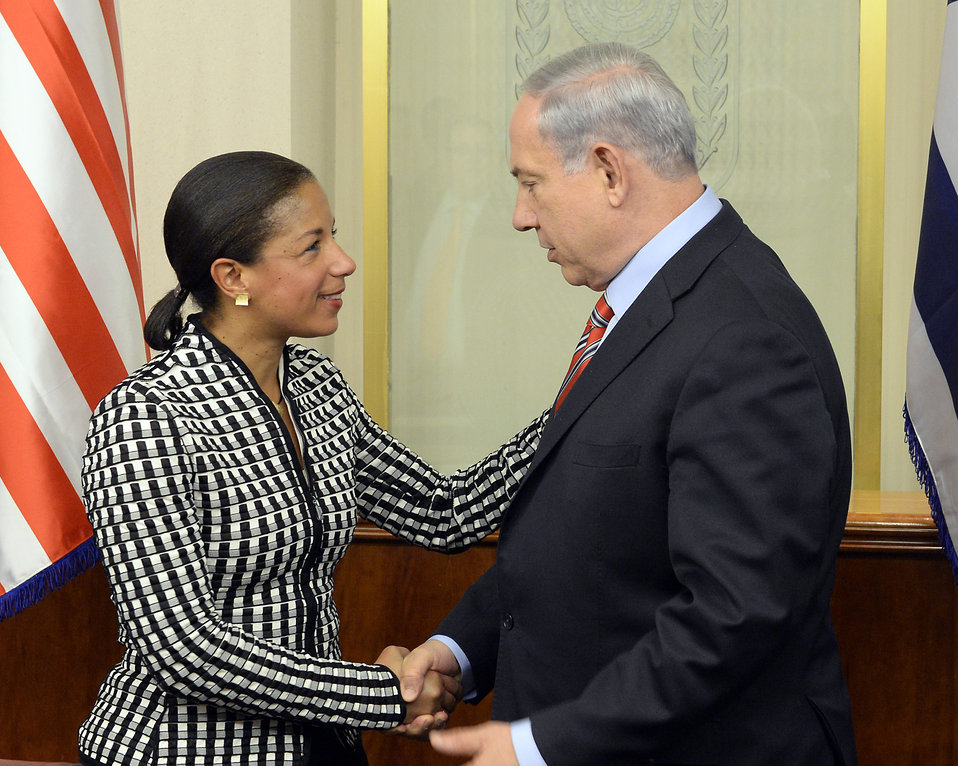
Ambassador Rice Meets With Israeli Prime Minister Netanyahu

Ambassador Susan Rice, the President’s National Security Advisor, meets with Israeli Prime Minister Benjamin Netanyahu at the Prime Minister's Office in Jerusalem on May 7, 2014.